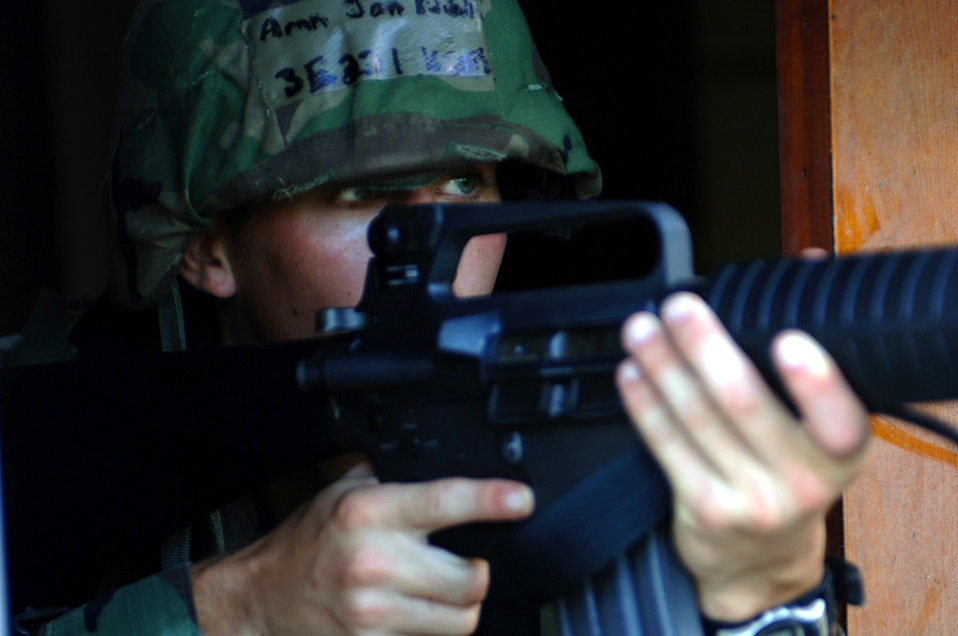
Preparing for the real thing

ANDERSEN AIR FORCE BASE, Guam -- Airman Jon Kidwell guards his post as he engages in a